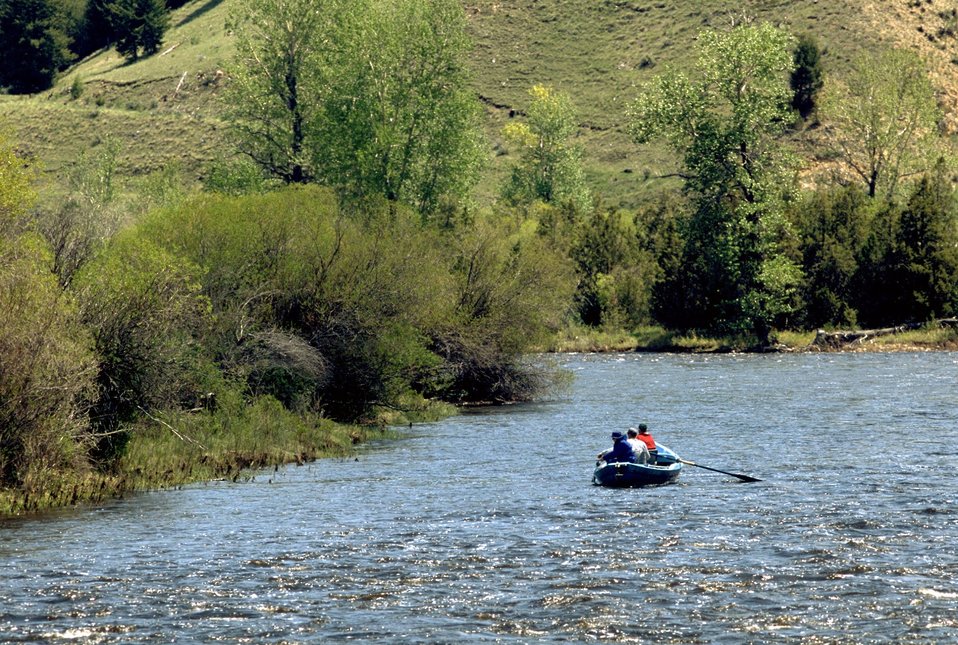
Fishermen on the Big Hole River